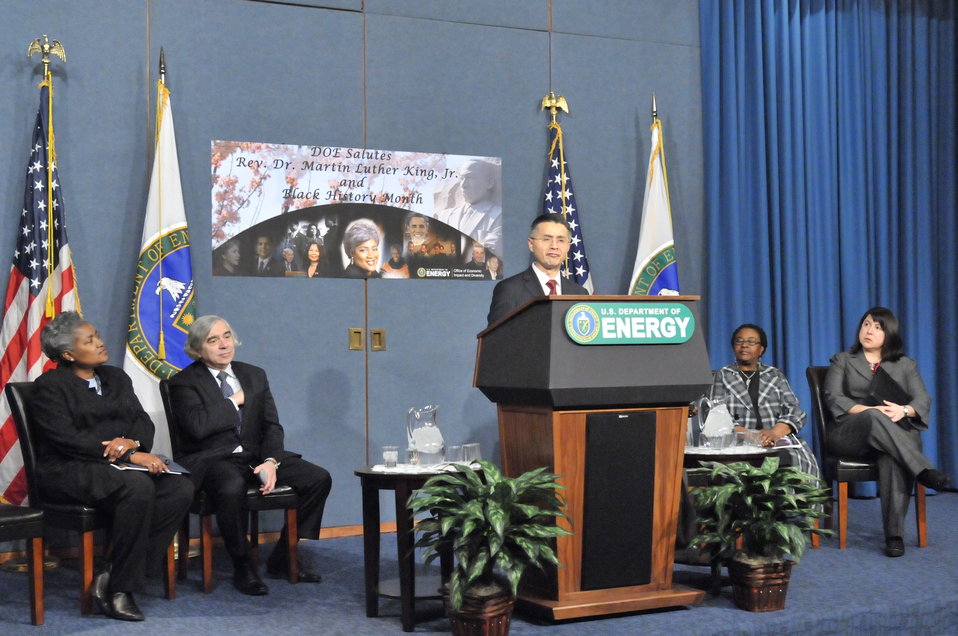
Department of energy -martin luther king / Black history month commemorative program with doe secretary e. Moniz in attendance